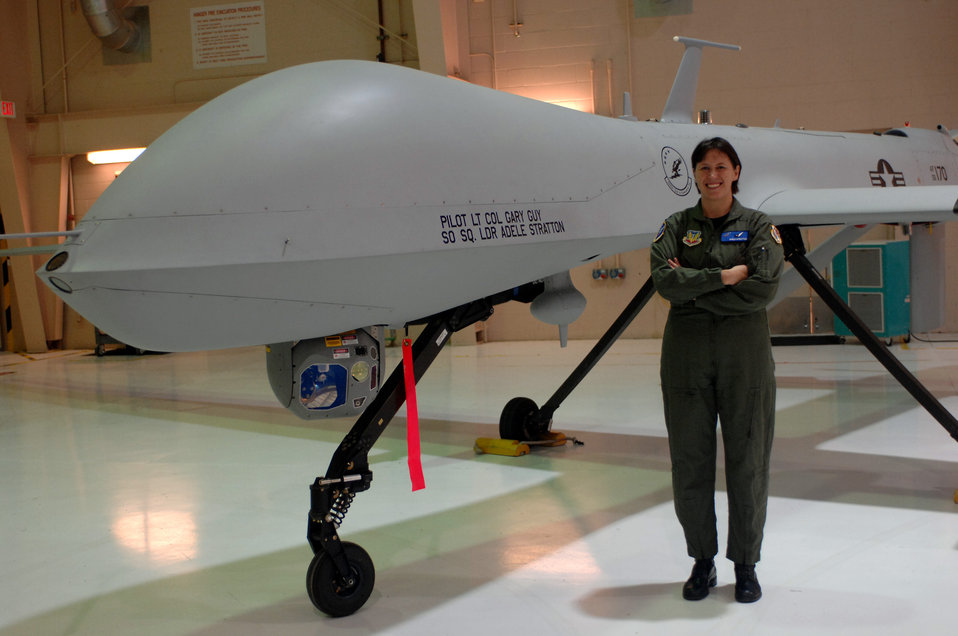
RPA exchange officer

Royal Air Force Sqn. Ldr. Adele Stratton with the 556th Test and Evaluation Squadron at Creech Air Force Base, Nev., stands beside an MQ-1 Predator. She is here as the first remotely piloted aircraft exchange officer.